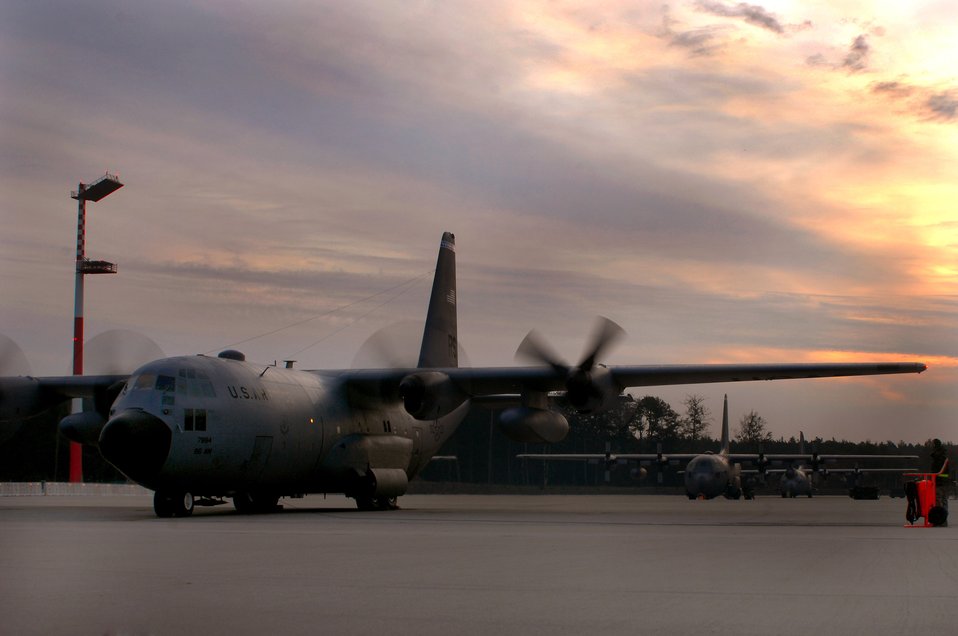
Underneath painted sky

The sun rises over a prepped C-130 Hercules aircraft ready for daily missions at Ramstein Air Base, Germany, Sept. 18. The Ramstein flightline is one of the busiest in the Air Force, launching more than 40 aircraft each day.